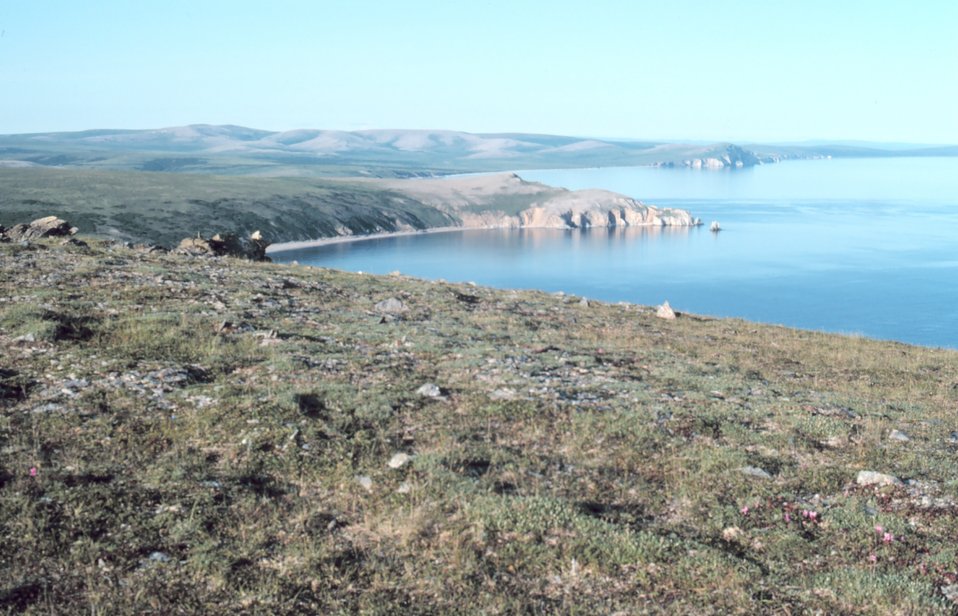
In the Pribilof Islands